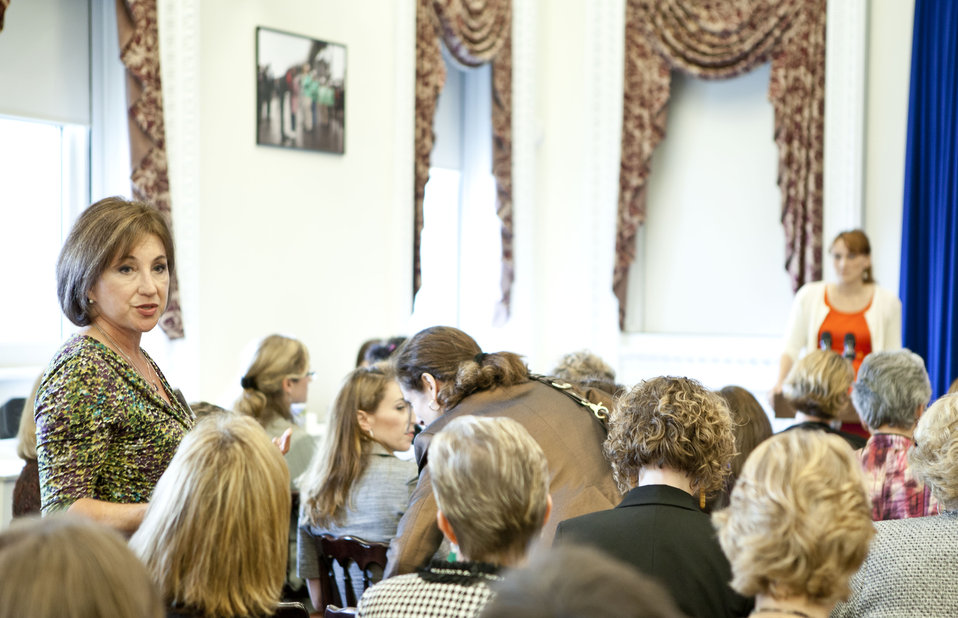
White House Leadership Summit on Women, Climate and Energy

Heather Zichal, Deputy Assistant to the President for Energy and Climate Change, opened up her discussion to the audience, taking questions and remarks on climate leadership.